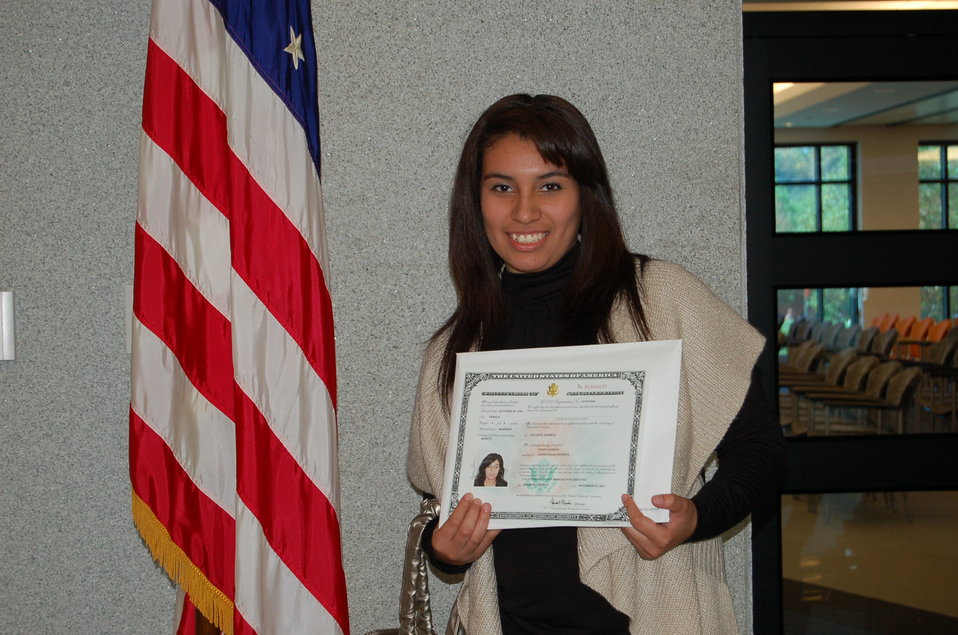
New Citizens